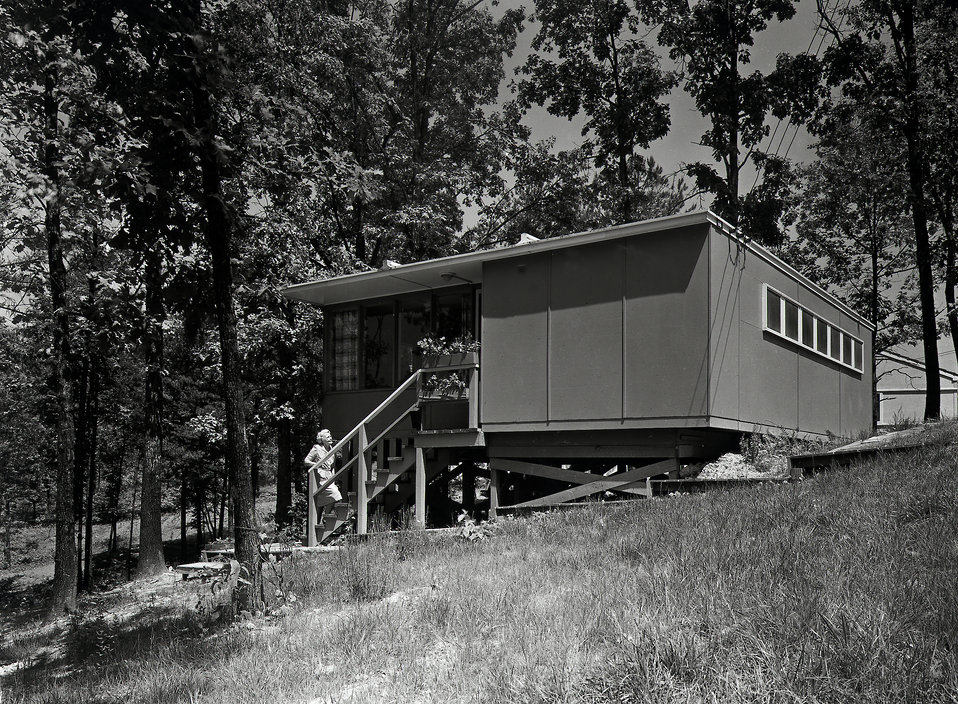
Prefab-flat top-type B-1 Oak Ridge

MED111 DOE photo by Ed Westcott
Prefab-flat top-type B-1 Oak Ridge Tennessee 1944